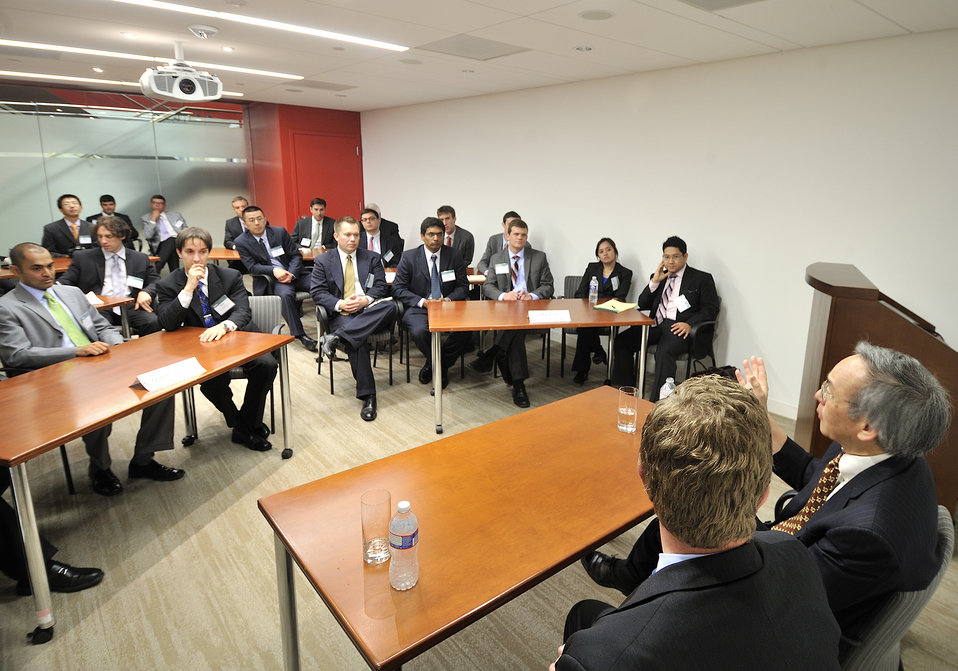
National Clean Energy Business Plan Competition

The National Clean Energy Business Plan Competition inspired nearly 300 university teams across the country to create new businesses to commercialize promising energy technologies developed at U.S. universities and the National Laboratories.